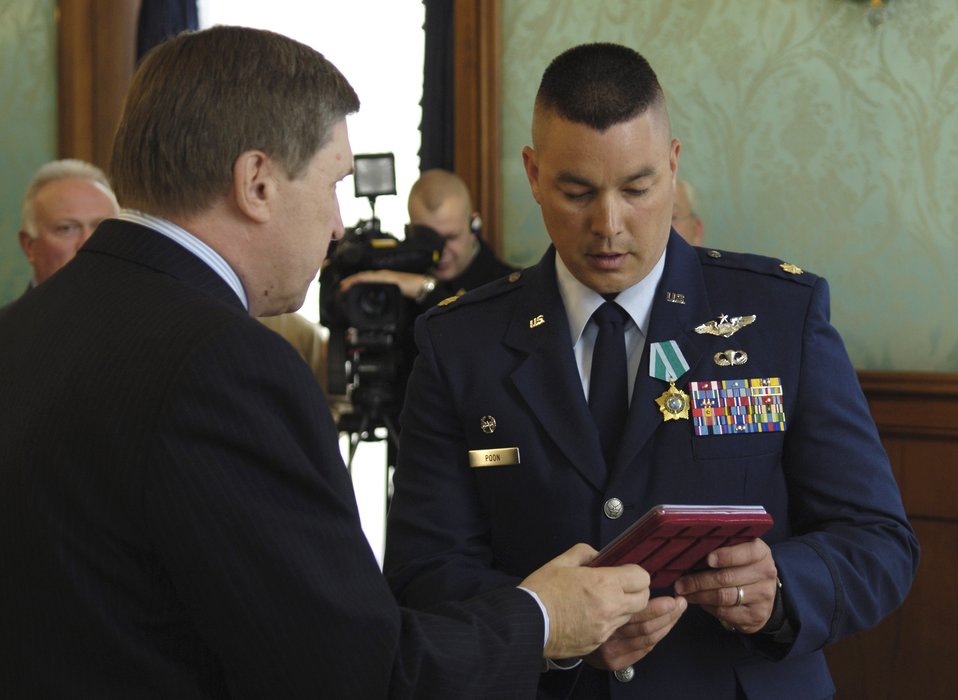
Order of Friendship Medal

Russian ambassador Yuri Ushakov presents Maj. Patrick Poon with the highest honor awarded to non-Russian citizens, the Order of Friendship Medal, at the Russian Embassy in Washington, D.C., Tuesday, Feb. 28, 2006. Major Poon and Navy Lt. Cmdr. Steven Smith received the medals for their actions associated with the rescue of a Russian submarine crew Aug. 7.